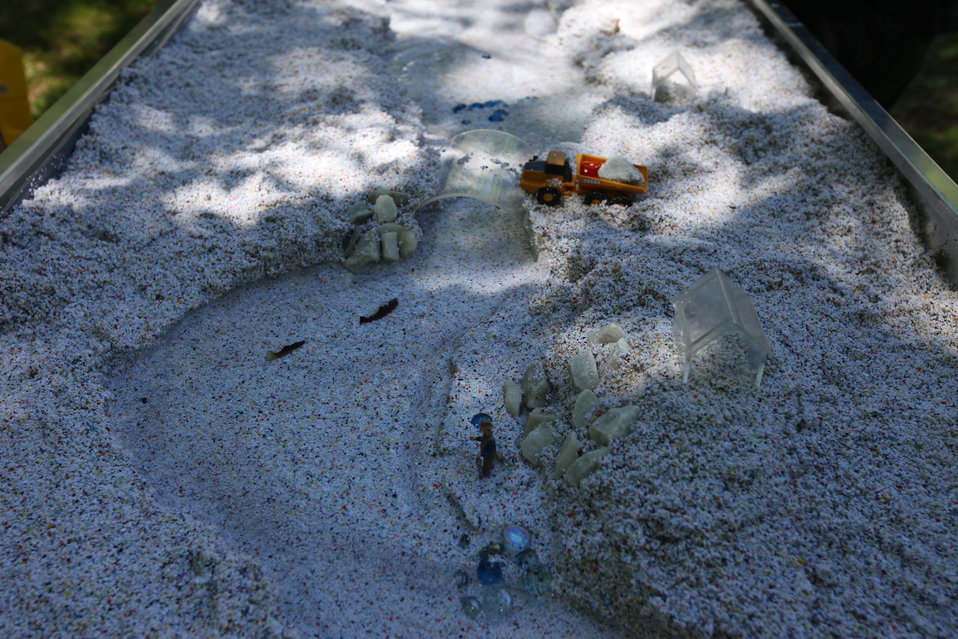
Youth Fishing Derby 2012

Megan Nagel/USFWS